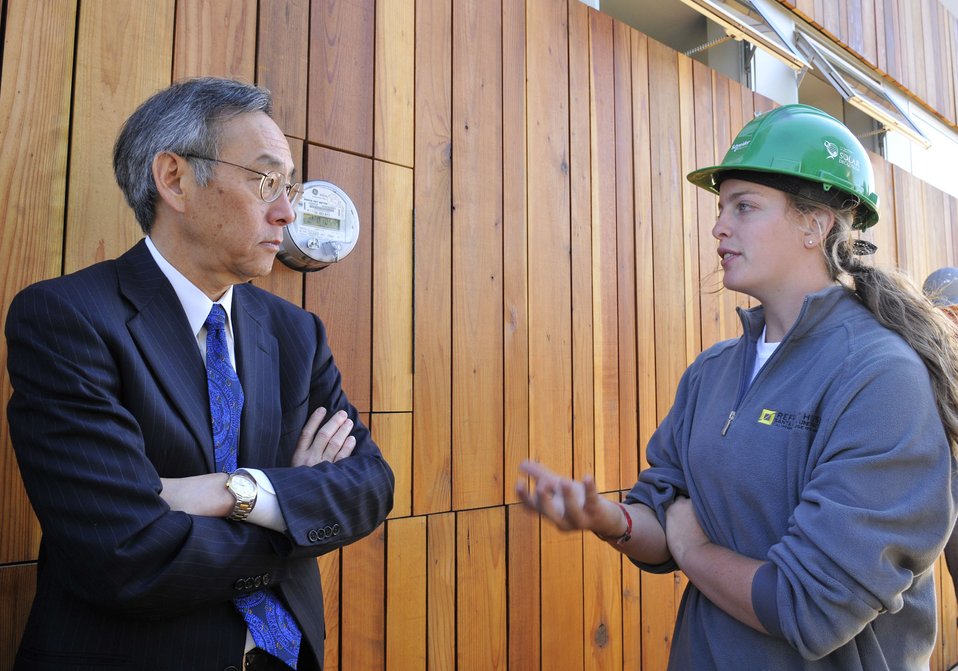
Solar Decathlon 2009 on the National Mall, with Sec. Chu

Solar Decathlon 09